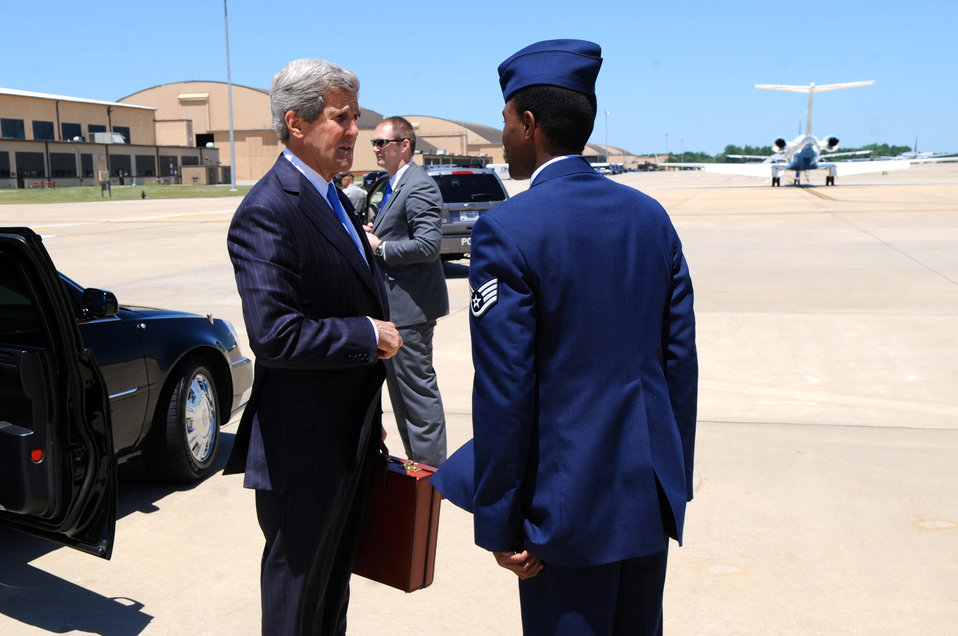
Secretary Kerry Greets a U.S. Air Force Protocol Officer

U.S. Secretary of State John Kerry greets a U.S. Air Force Protocol Officer as he arrives at Andrews Air Force Base to fly to an Organization of American States ministerial meeting in Antigua, Guatemala, on June 4, 2013. State Department photo/ Public Domain]